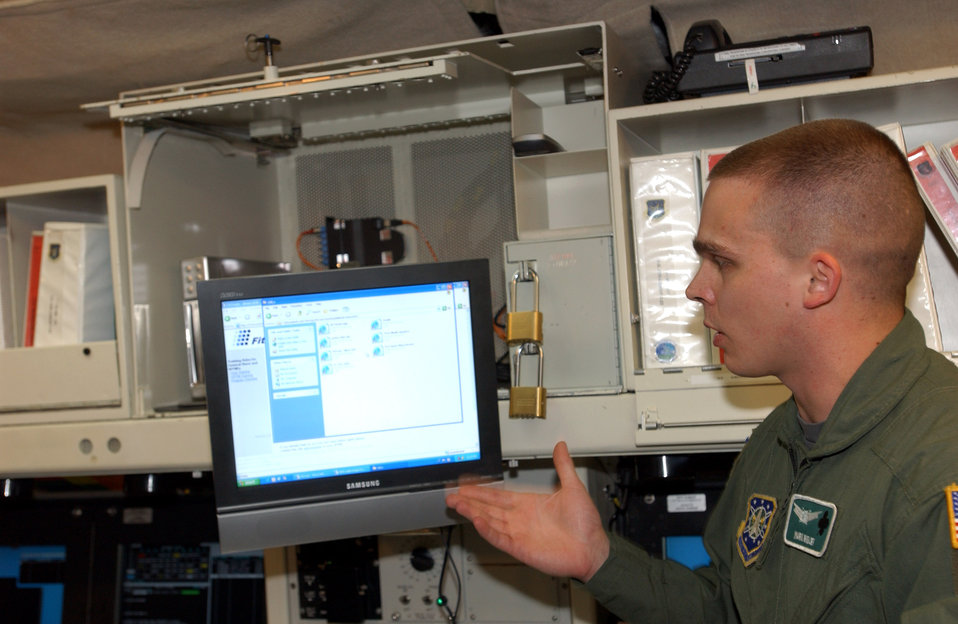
Missileers receive new computer capabilities

Capt. Mark Bigley tests a computer with Internet access on May 30, 2006, that has been placed in a 91st Space Wing ICBM launch control center. The wing is at Minot Air Force Base, N.D. The system, Netlink, will undergo an initial trial phase to collect data on whether the system improves productivity for crewmembers on duty. If the results are positive, then all ICBM wings in 20th Air Force will be authorized to implement the program. Captain Bigley is a 741st Missile Squadron combat crew commander.